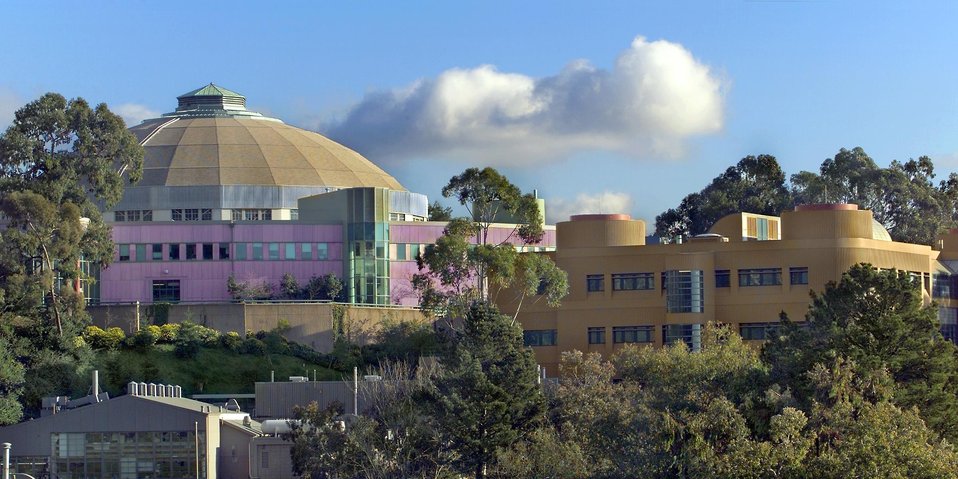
DOE'S LAWRENCE BERKELEY NATIONAL LABORATORY WITH ADVANCED LIGHT SOURCE BUILDING AT LEFT.

DOE'S LAWRENCE BERKELEY NATIONAL LABORATORY IN CALIFORNIA IS A LEADER IN SCIENCE AND ENGINEERING RESEARCH. THE LAB CONDUCTS UNCLASSIFIED RESEARCH ACROSS A WIDE RANGE OF SCIENTIFIC DISCIPLINES WITH KEY EFFORTS IN FUNDAMENTAL STUDIES OF THE UNIVERSE, QUANTITATIVE BIOLOGY, NANOSCIENCE, NEW ENERGY SYSTEMS AND ENVIRONMENTAL SOLUTIONS, AS WELL AS THE USE OF INTEGRATED COMPUTING AS A TOOL FOR DISCOVERY.